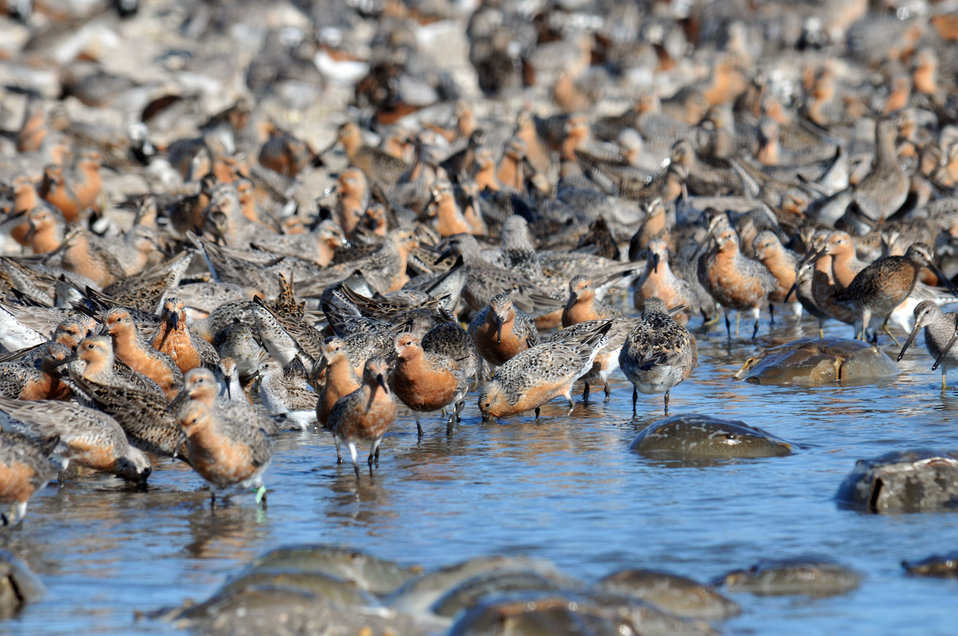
Red Knot

Mispillion Harbor, Delaware.